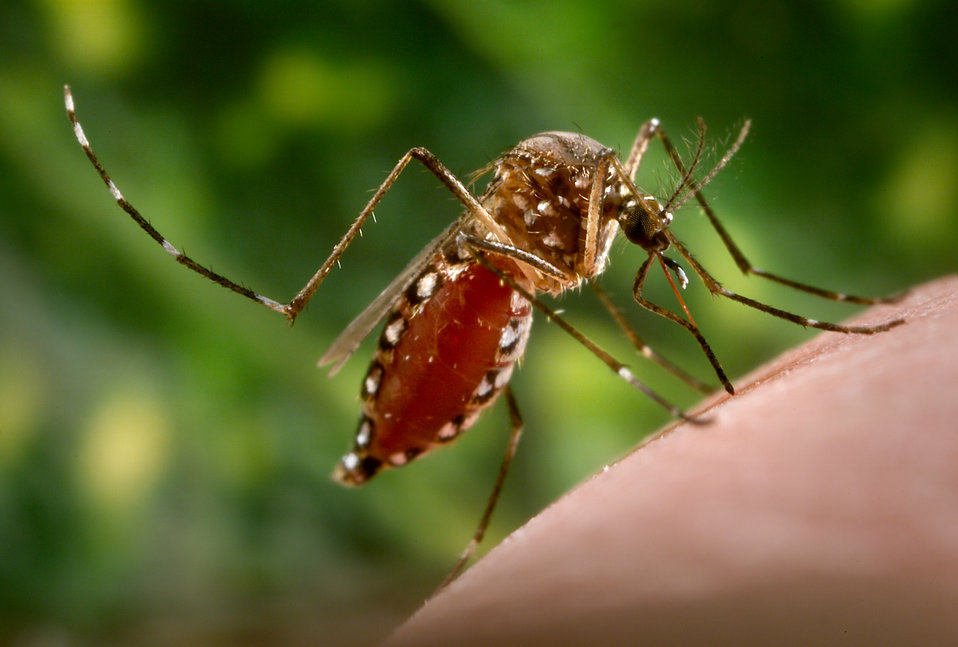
This 2006 photograph depicted a female Aedes aegypti mosquito as she was in the process of acquiring a blood meal from its human host, after having penetrated the skin surface with the sharply-pointed "fascicle". Normally, this female would be obtaining her blood from an unsuspecting host, but in this case, the CDC's biomedical photographer, James Gathany, had volunteered his own hand in order to entice the insect to alight, and feed. Note that her abdomen had become distended as her stomach was filling with her blood meal, and how the proboscis' labial sheath was in its retracted, pulled back configuration, exposing the inserted, sharp fascicle, which had turned red, as the blood was passing up the straw-like apparatus.